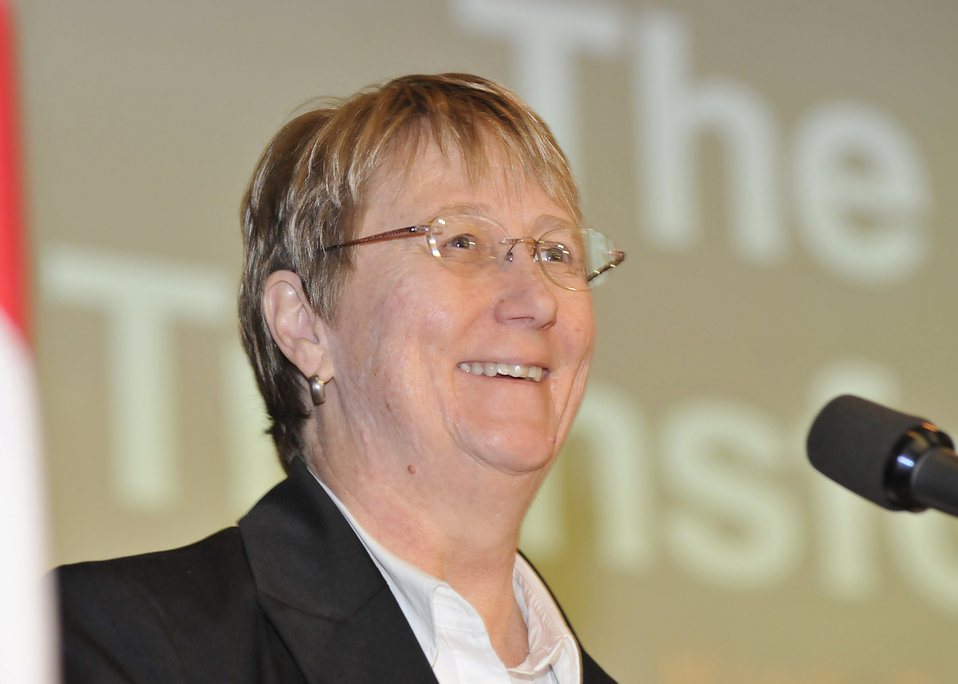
Deputy Chief of Staff Carole Jett speaks at the first of six Cultural Transformation Employee Listening Sessions held at the U.S. Department of Agriculture Jefferson Auditorium, in Washington, DC., on Wednesday, March 31, 2010. USDA is undergoing a process to transform the culture of the agency by creating a diverse, inclusive, and high-performance organization. USDA photo 10di1287-01.